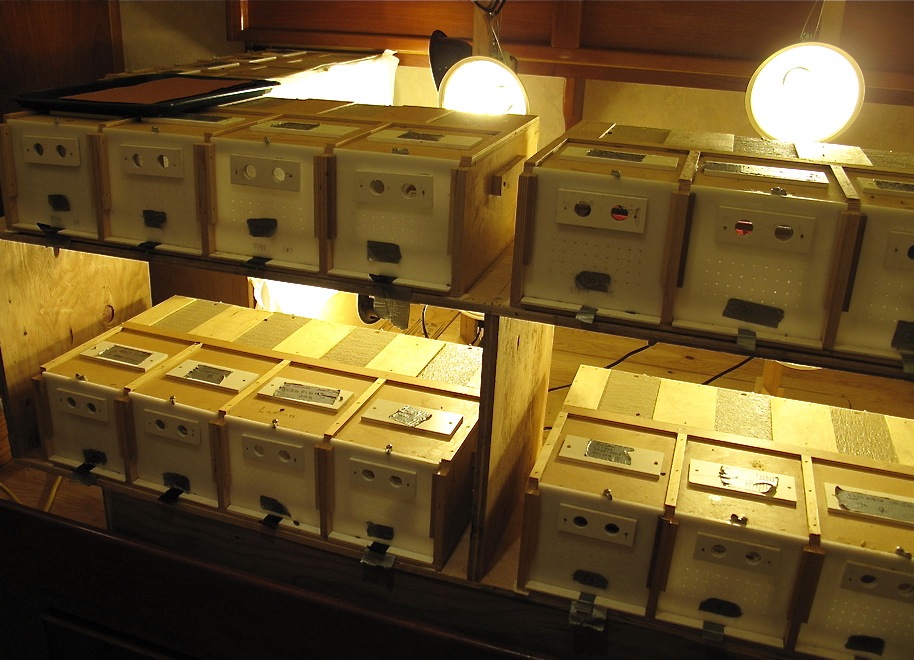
bound for Laysan Island

The 24 translocated millerbirds and scientists caring for them made the 650-mile journey from Nihoa Island to Laysan Island aboard the R/V Searcher.